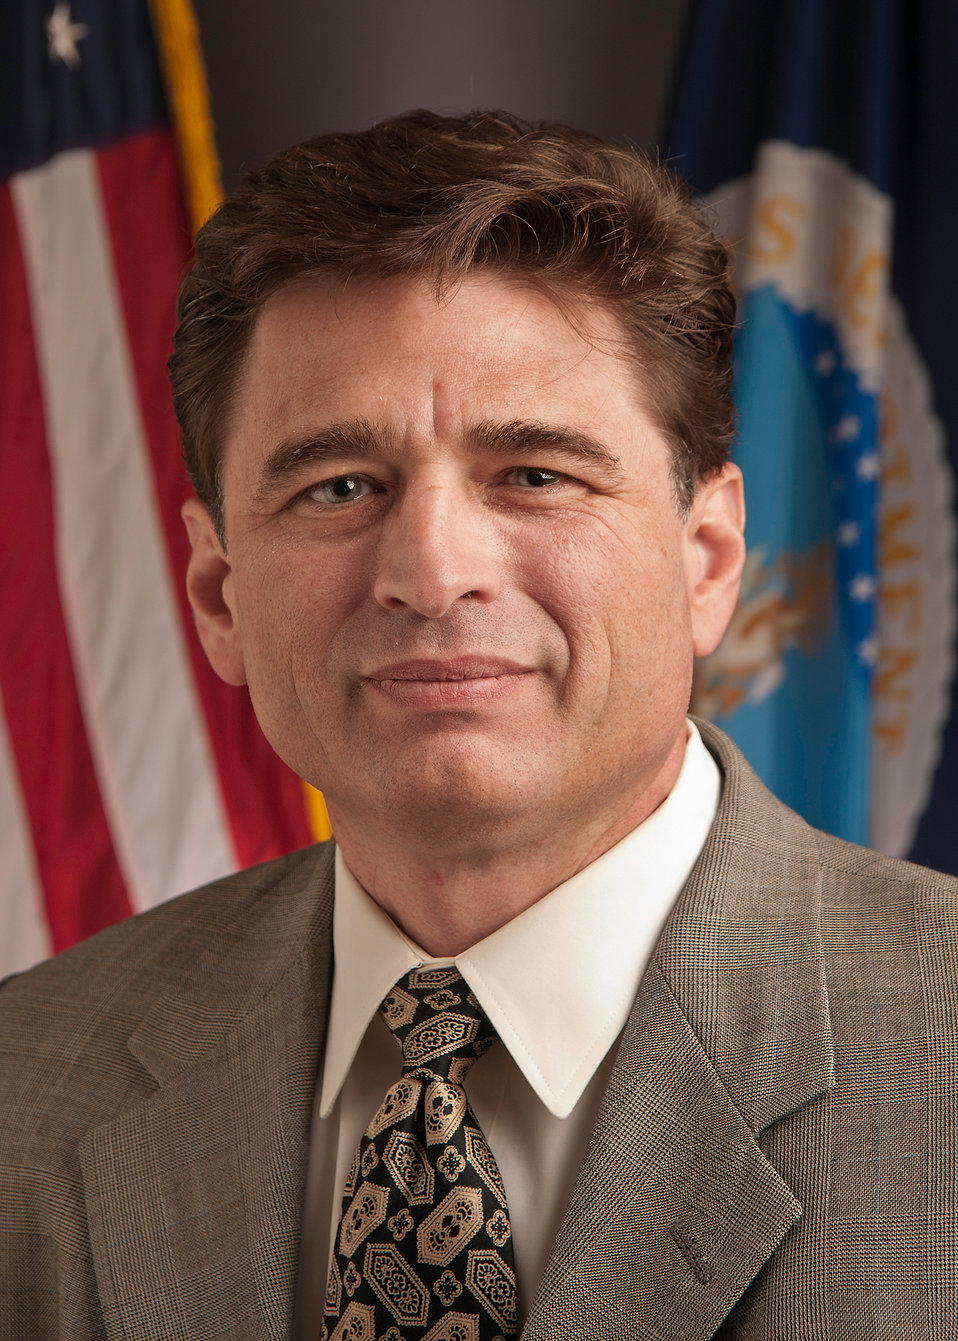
20110510-OSEC-RBN-0806 Deputy Assistant Secretary for Civil Rights, Frederick Phaeffle

Deputy Assistant Secretary for Civil Rights, Frederick Phaeffle.